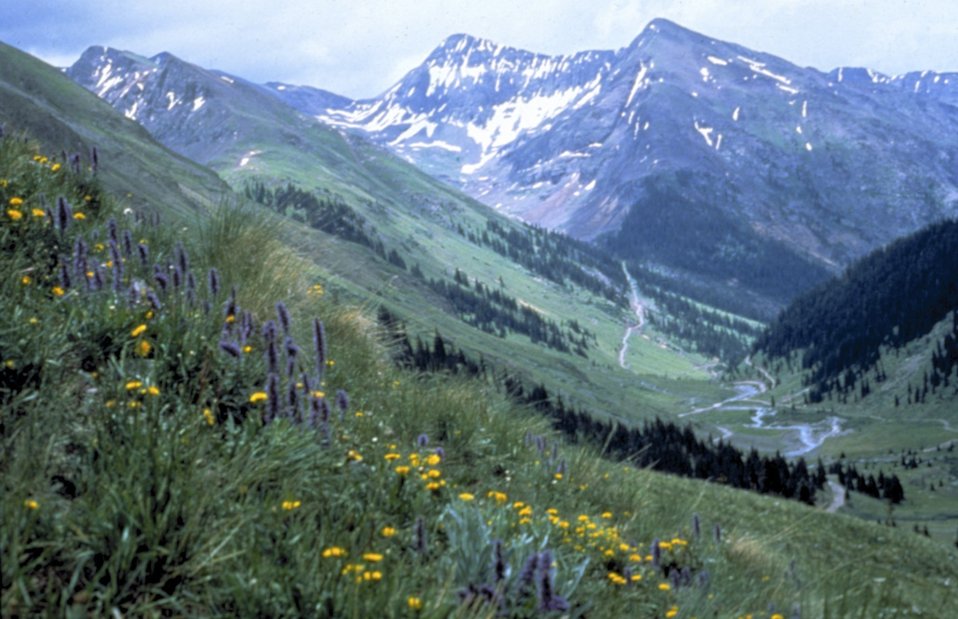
Upper Animas River Valley